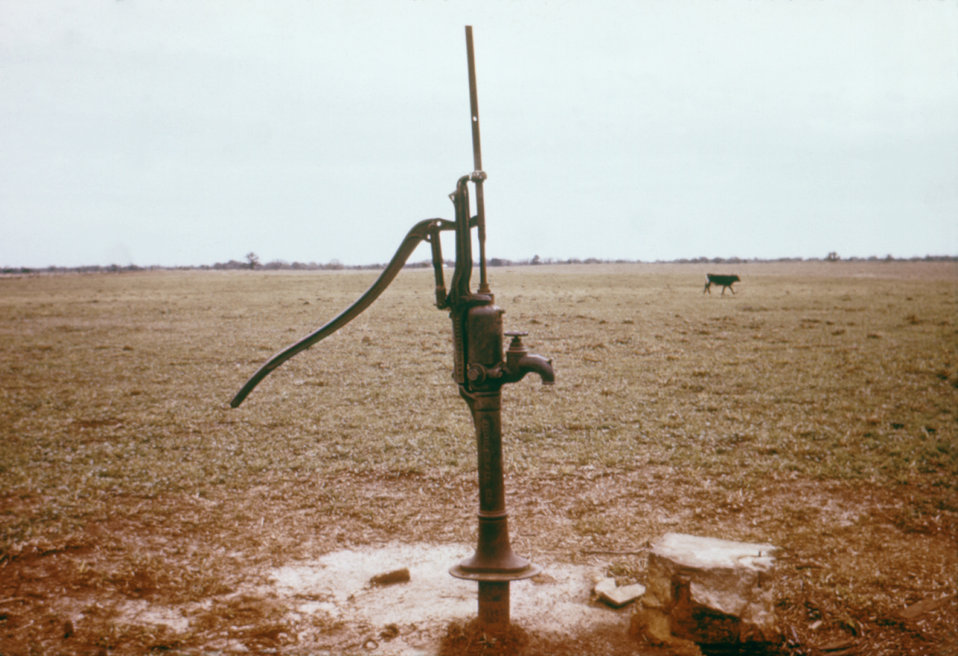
The improper slab height of this water well produced inadequate drainage, which could cause contamination of the water supply.